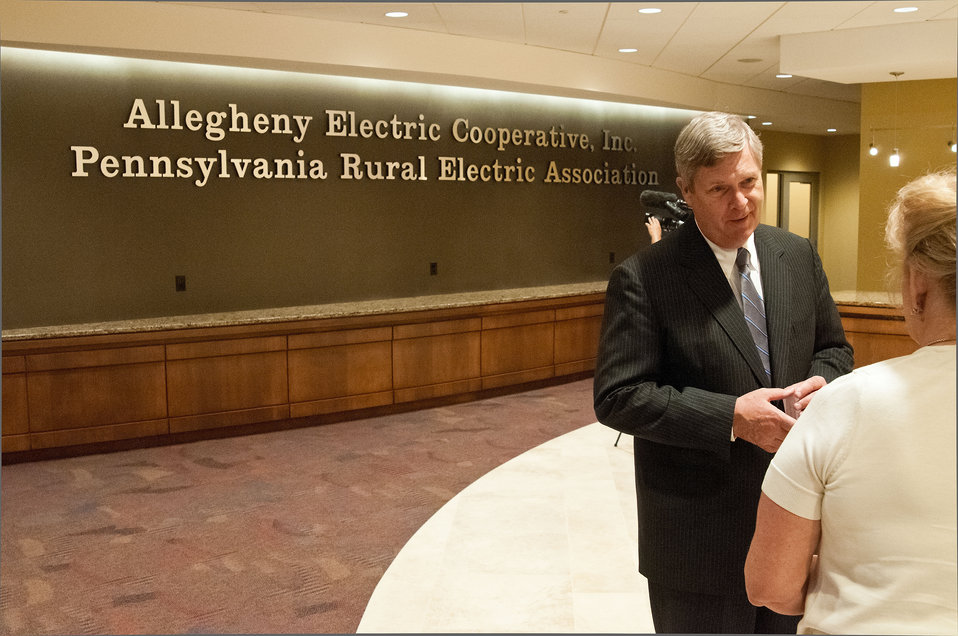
Agriculture Secretary Tom Vilsack spoke with constituents after his Investments in Rural Pennsylvania speech about the U.S. Department of Agriculture's (USDA) Rural Development (RD) Rural Utilities Service (RUS) Proposed Energy Efficiency Rule at the Alleghany Electric Cooperative, Inc. Pennsylvania Rural Electric Association in Harrisburg, PA on Tuesday, July 17, 2012.